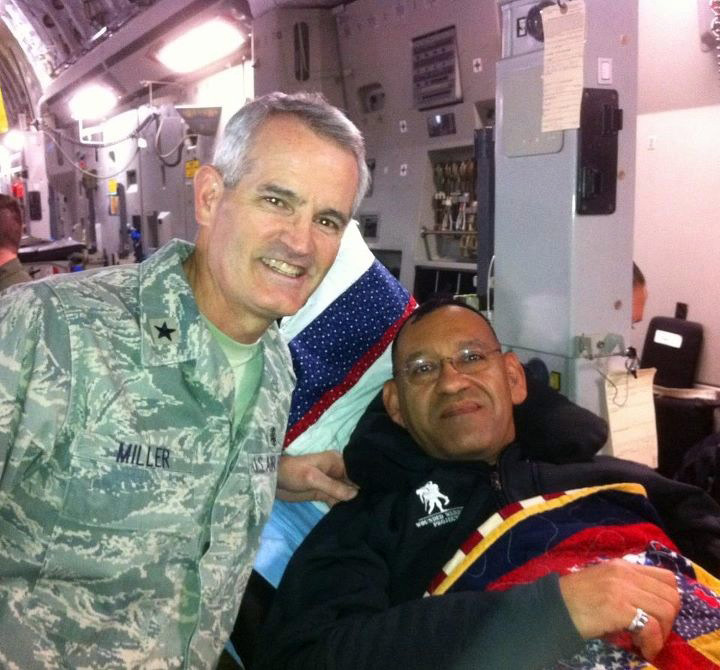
Journey home

Maj. George Zaldivar (right) is greeted by Brig. Gen. Michael Miller, the chief of the Medical Service Corps, Office of the Surgeon General, on his way home to the U.S. from Kandahar Airfield, Afghanistan, in October 2011. Zaldivar suffered a traumatic brain injury when a rocket struck just outside the medical facility in which he worked in Afghanistan.